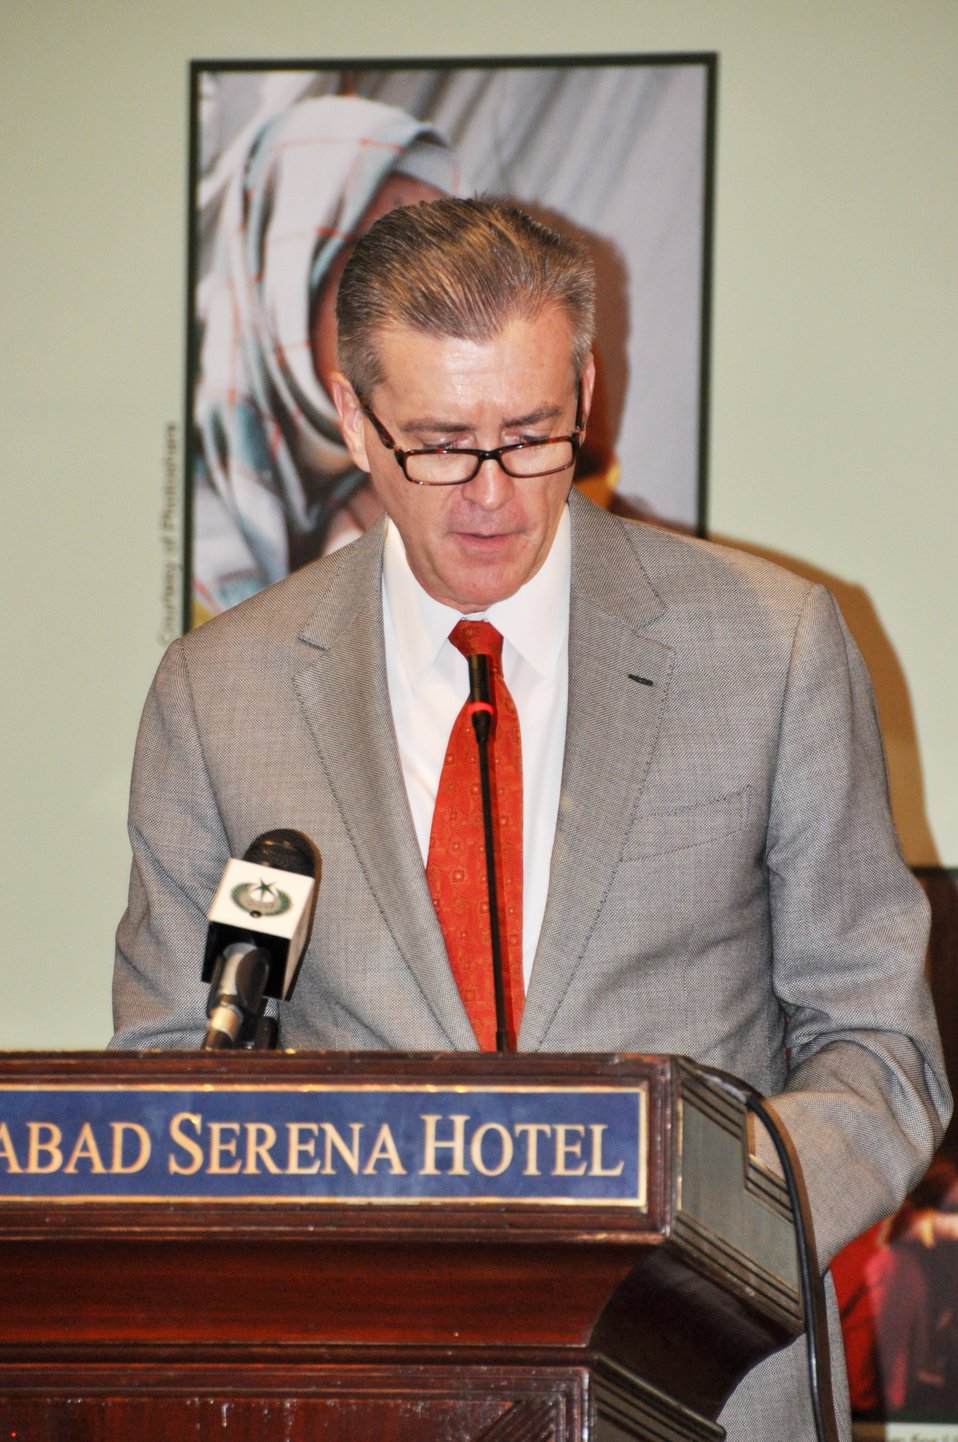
PHDS Launch

Ambassador Olson addressing at the launch of Pakistan Human Demographic Survey 2012-13 on January 22, 2014